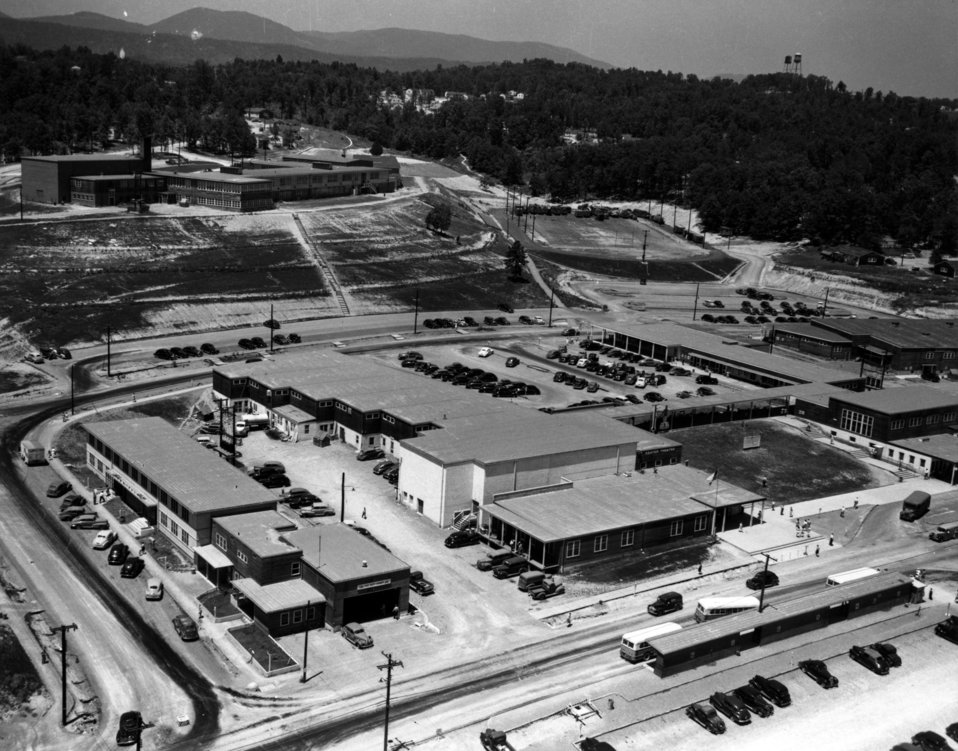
Aerial of Oak Ridge